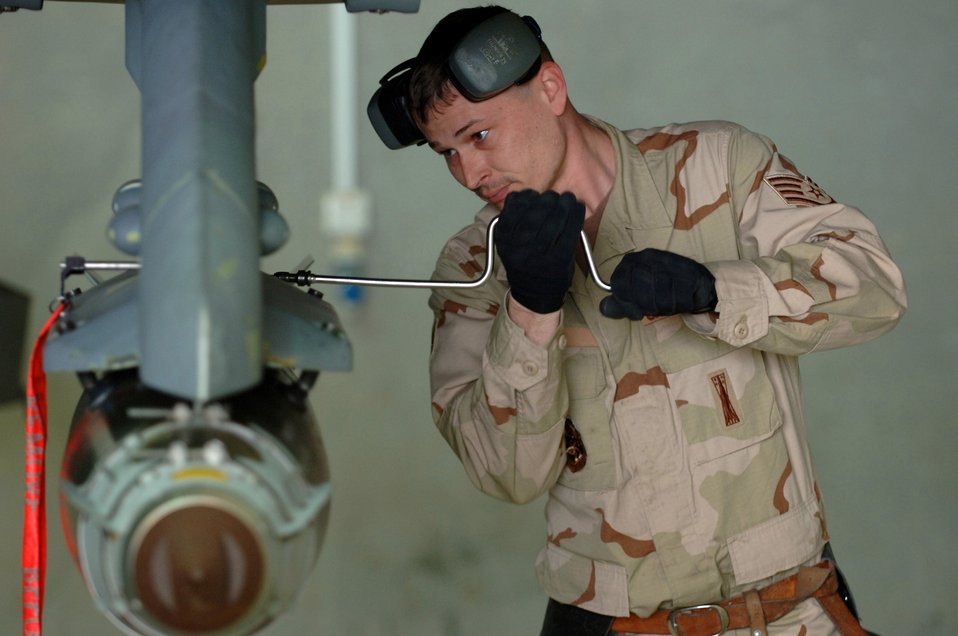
Making sure it's on tight

Staff Sgt. Steven Socia uses a speed wrench to secure a Joint Direct Attack Munition to an F-16 Fighting Falcon Feb. 7 at Balad Air Base, Iraq. Sergeant Socia is a weapons loader assigned to the 332nd Expeditionary Aircraft Maintenance Squadron.